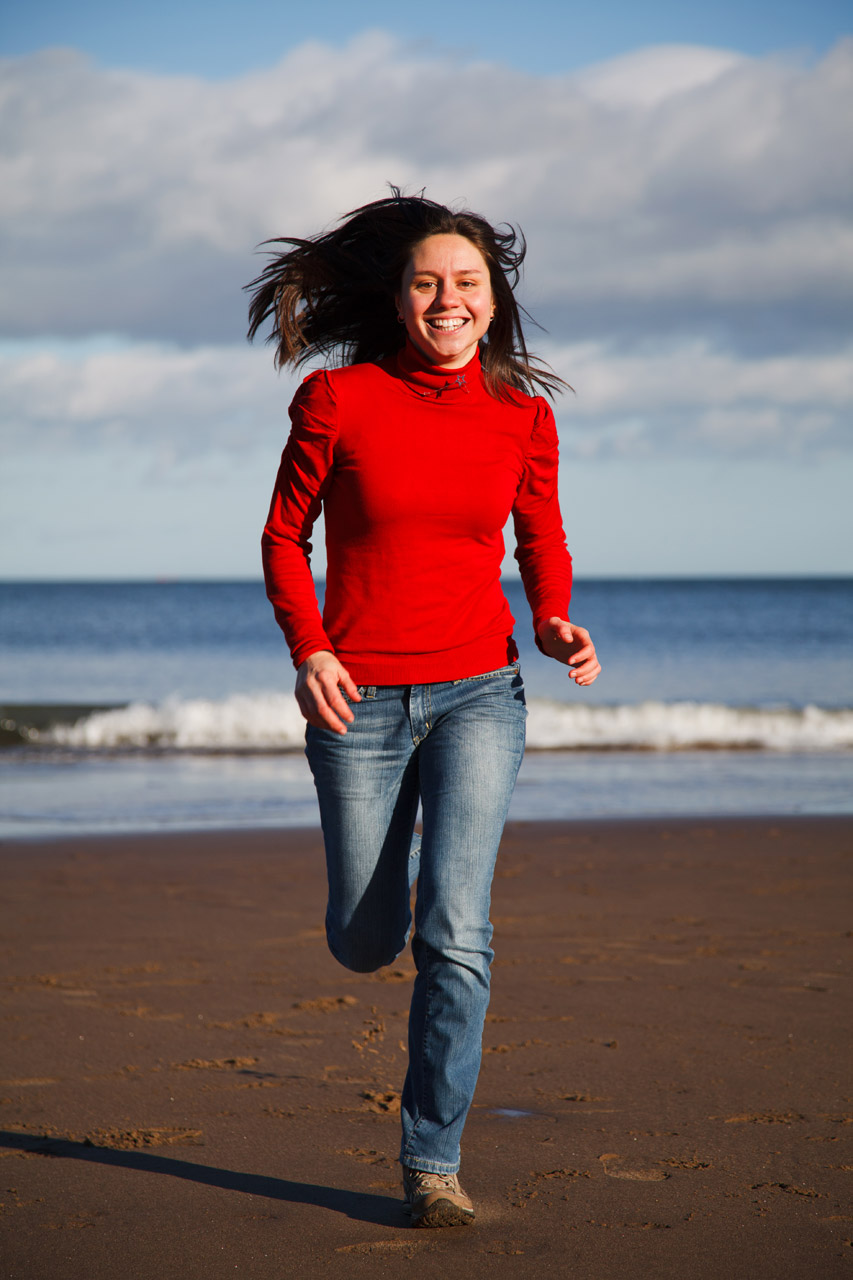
Woman running

Young woman running on beach.